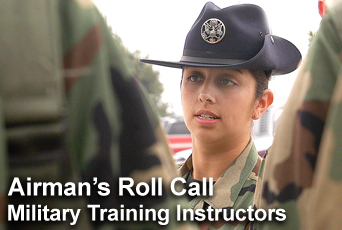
Airman's Roll Call: Military training instructors

This week's Airman's Roll Call focuses on the Air Force's need for more military training instructors to meet the demands of increasing end strength.